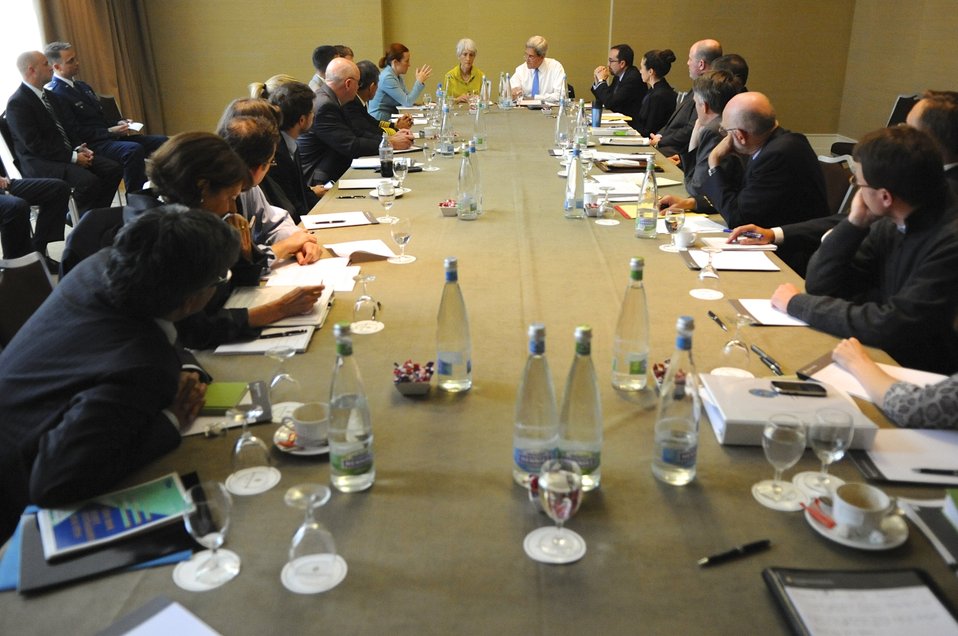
Secretary Kerry Holds Initial Meeting with Interagency Team

1:38 p.m., September 12, 2013 - U.S. Secretary of State John Kerry and Undersecretary for Political Affairs Wendy Sherman oversee the first meeting of their interagency team before the kickoff negotiating session with their Russian counterparts focused on eliminating Syrian chemical weapons.